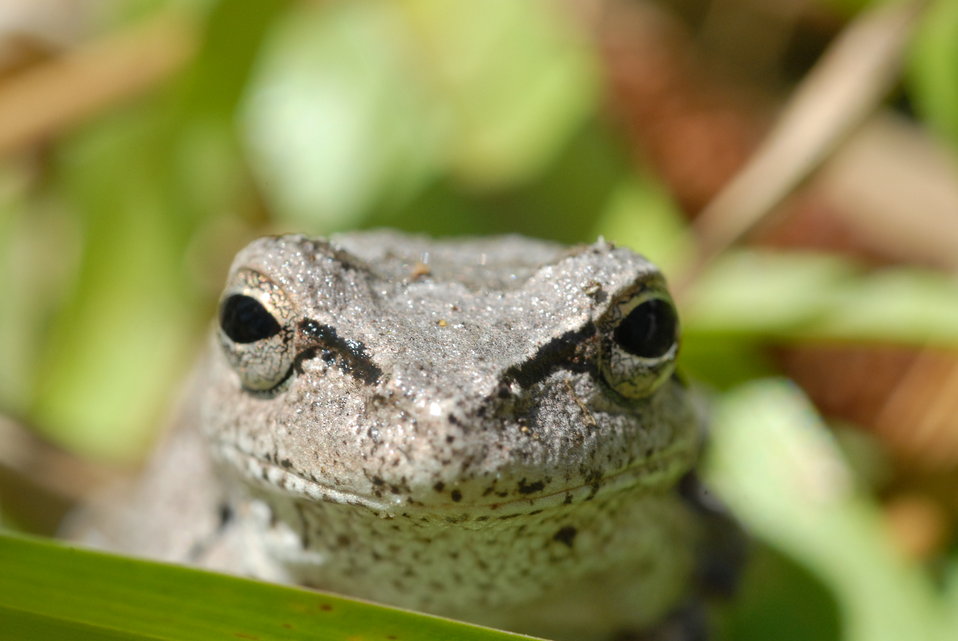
Gray tree frog

At night, wet areas in the southern longleaf forest fill with the calls of amphibians seeking a mate. This gray tree frog and many other amphibians depend on the longleaf ecosystem for survival.